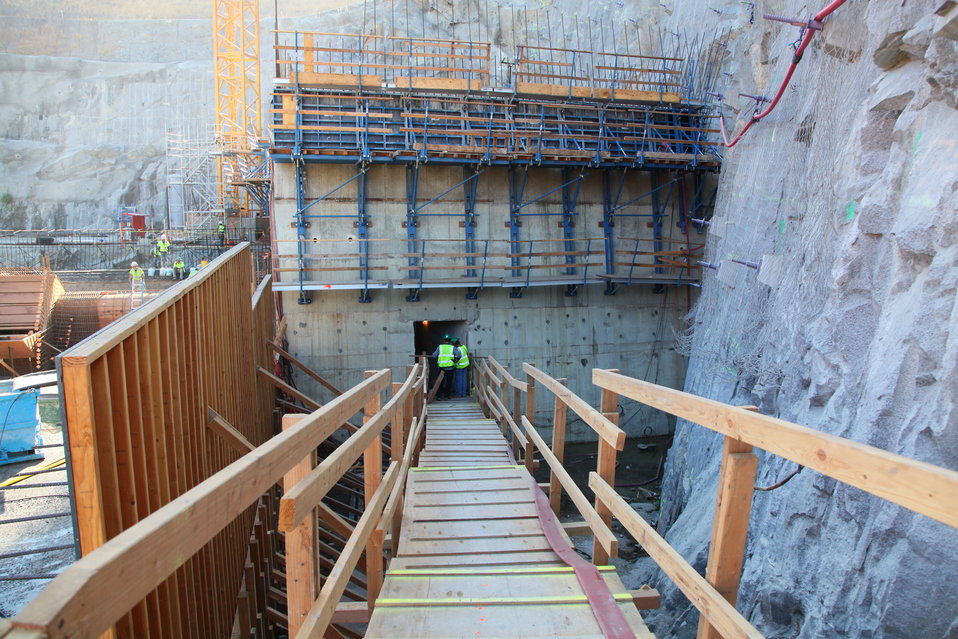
Safety a priority at Folsom Dam project

Contractors for the U.S. Army Corps of Engineers Sacramento District safely navigate - the construction zone at the auxiliary spillway using walkways and scaffolding at the Folsom Dam in Folsom, Calif., Sept. 19, 2012. Safety at the job site is a number one priority; equipment and personal safety are a requirement. The Sacramento District is building the spillway in cooperation with the U.S. Bureau of Reclamation, the Central Valley Flood Protection Board, and the Sacramento Area Flood Control Agency to improve the safety of the existing dam and reduce flood risk for the greater Sacramento area.